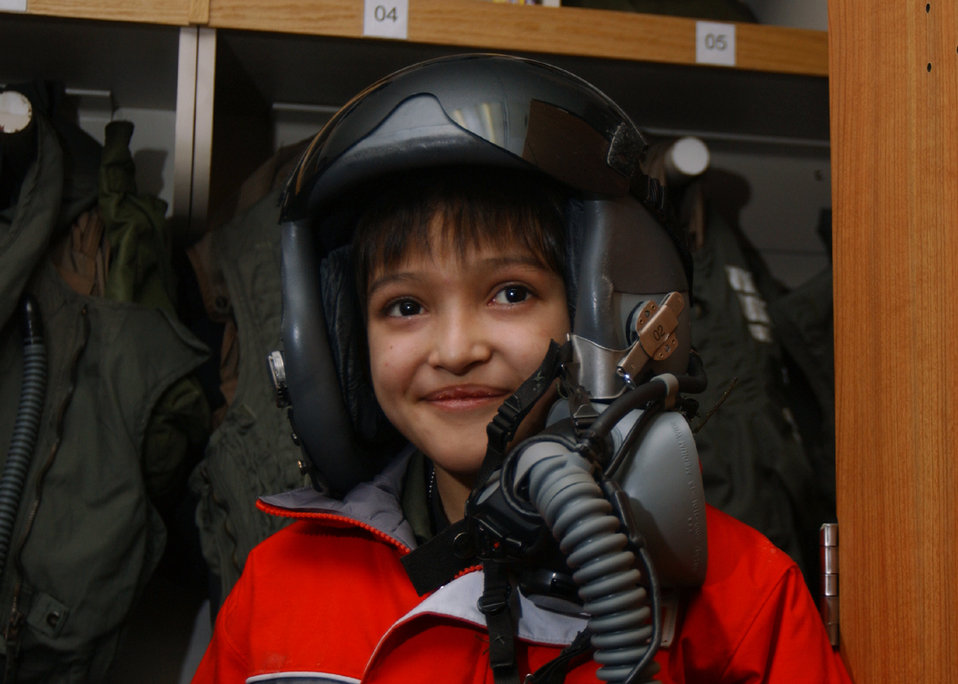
Pilot for a day

EIELSON AIR FORCE BASE, Alaska -- Kameron Ballard-Huffman tries on an F-16 Fighting Falcon helmet as the Fighter Pilot for a Day here March 18. The program lets terminally ill children see what it is like to be a fighter pilot. Kameron is in the end stage of a rare liver disease. He is from Husila, Alaska, a town about 250 miles northwest of Fairbanks.